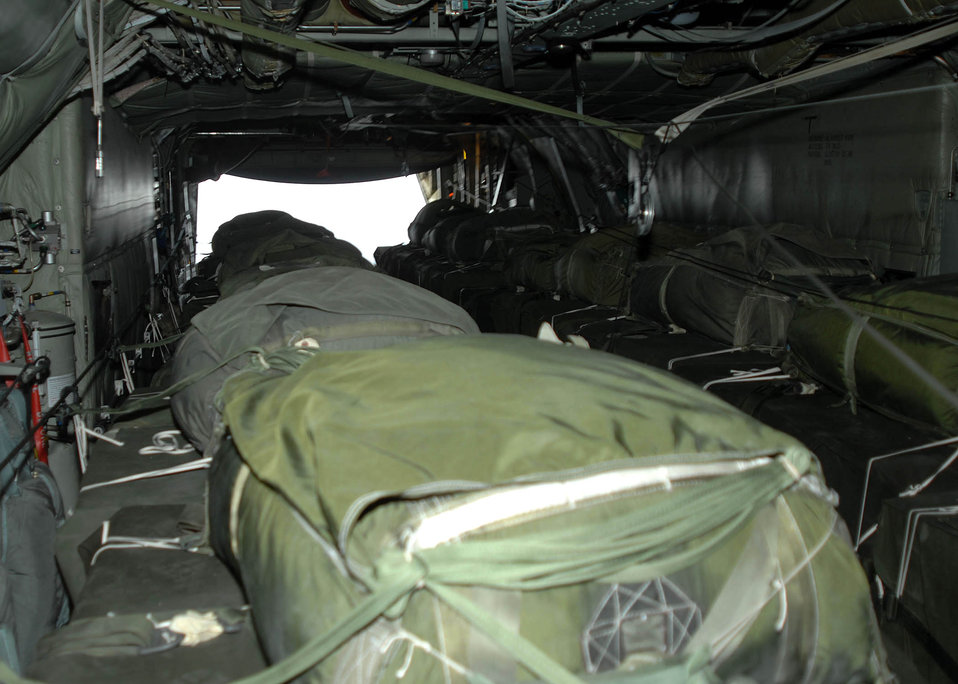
C-130s put troops, supplies on target in Afghanistan

The ramp cargo door opens over a drop zone to release bundles of supplies being airdropped from a C-130 Hercules to troops in the field by the 774th Expeditionary Airlift Squadron from Bagram Air Base, Afghanistan. The airdrop crew are Air National Guard with the 165th Airlift Wing from Louisville, Ky., and the 109th Airlift Wing from Schenectady, N.Y.